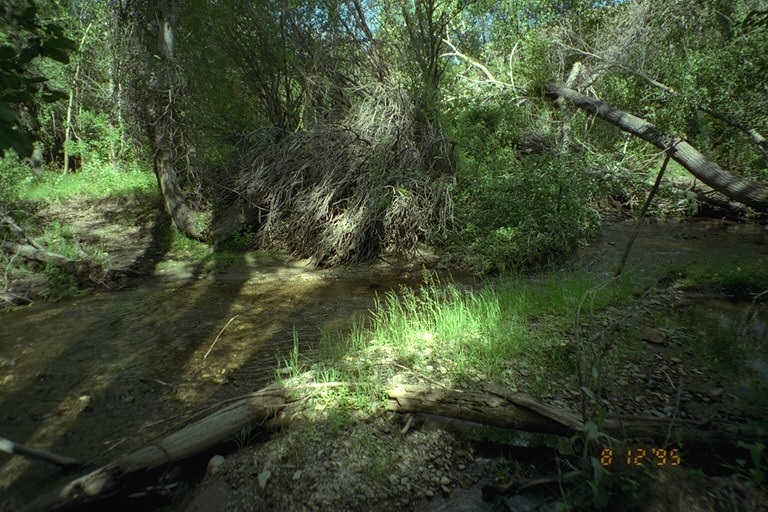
Riparian area Public Lands Salmon Field Office UCSC Upper Columbia Salmon Clearwater District